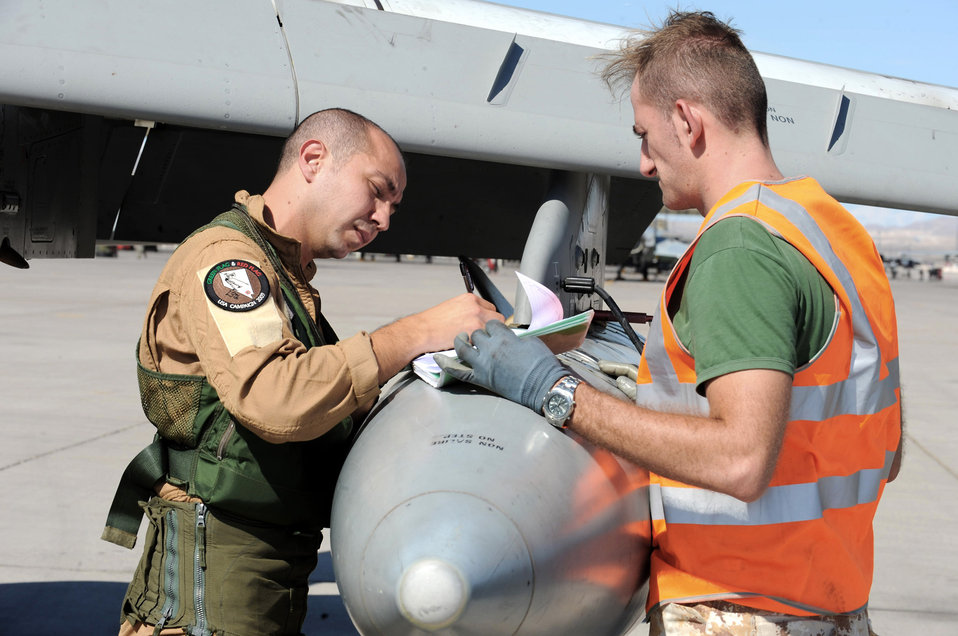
Green Flag provides Italian air force new insight on close air support

Italian air force Capt. Prudente Alfonso fills out preflight paperwork with Master Sgt. Alex Biancardi before climbing into an AMX/ A-1 fighter for a training mission at Red Flag 09-5 Aug. 24 at Nellis Air Force Base, Nev. Before participating in Red Flag, the Italian Air Force participated in their first-ever Green Flag here Aug. 9 through 20. Green Flag is a realistic close-air-support training exercise for Airmen and Soldiers preparing to deploy in support of combat operations in Southwest Asia. Sergeant Biancardi is an Italian air force crew chief.